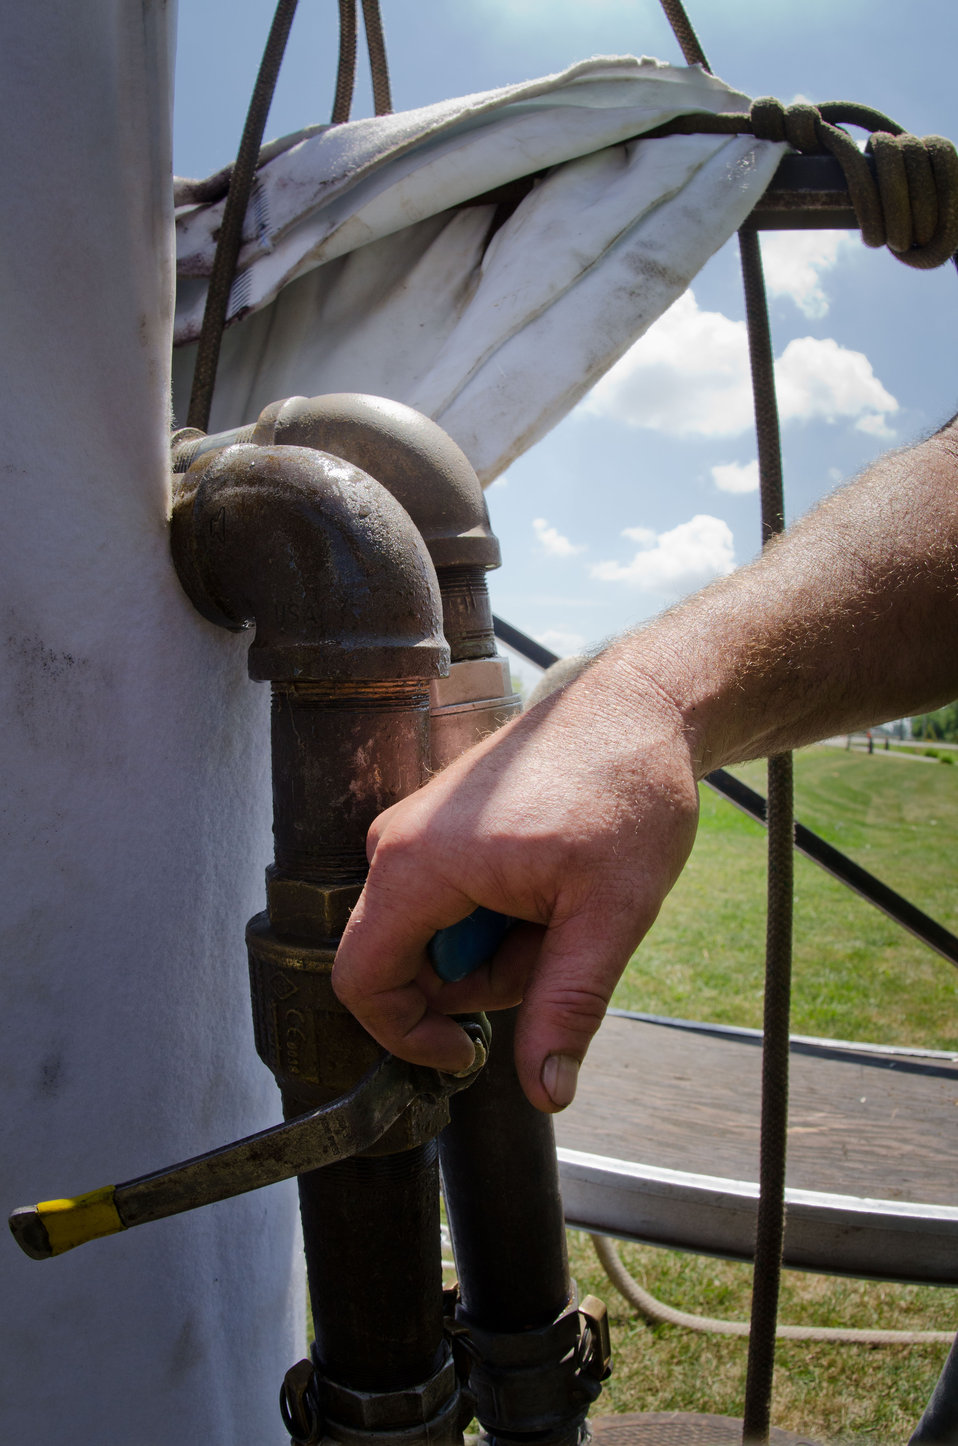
Water valves are opened to begin recirculation water that will be heated to cure the white resin impregnated fabric into a hard plastic pipe lining that extends from one manhole to the next one, on Tuesday, July 19, 2011, part of Water hoses from a tanker truck leads to a truck mounted boiler that heats water for recirculation into white resin impregnated fabric in a sanitary sewer pipe that runs under these grounds. It will cure the fabric into a hard plastic pipe lining from one manhole to the next one, on Tuesday, July 19, 2011, as part of Water hoses from a tanker truck leads to a truck mounted boiler that heats water for recirculation into white resin impregnated fabric in a sanitary sewer pipe that runs under these grounds. It will cure the fabric into a hard plastic pipe lining from one manhole to the next one, on Tuesday, July 19, 2011, as part of Buena Vista Township Phase II Sewer Project, in Michigan, where the United States Department of Agriculture funded the refurbishment and rehabilitation of 45,500 linear feet of defective sewer pipe, and more than 200 manholes; on Tuesday, July 19, 2011. The project includes the construction of an off-site excess flow basin; construction of a pump station; and improvements at the wastewater treatment plant. The system will serve 2,349 residential and 177 commercial customers and will bring the township into compliance with environmental regulations regarding pollutant discharges.
Inspections revealed that the 1960s sanitary sewer system had inflow from storm and rainwater systems and overflowed into the sanitary sewer system. Infiltration was found in the form of cracks, and other failures that allowed groundwater to enter. Rather than digging up the old system, rehabilitation with a cured-in-place-pipe (CIPP) method was chosen. This provides up to a 50% savings and the liner is projected to last 50-100 years. CIPP repair of the 8-30” diameter pipes involves pulling a resin-saturated fabric liner through a damaged pipe, which is then cured with steam or hot water to form a tight-fitting, joint less replacement pipe. Trenchless repair methods require less digging than traditional “dig and replace” repair methods and minimize damage to yards and landscaping. There are two of these teams and one manhole rehabilitation to seal the underground casting frame or brick structure. They process 600-800 feet per day.
Wade Trim Inc. Professional Engineer Tiffany Harrison said about working with the United States Department of Agriculture’s Rural Development “It was very easy, they make it very straight forward, in what paperwork they need. They were always available for questions.
USDA Rural Development has funded water and sewer projects in 117 Michigan communities serving more than 94,000 customers.
Senior Advisor to the Secretary of Agriculture Doug O’Brien said, “America will win the future by out-building, out-educating and out-innovating the world,” O'Brien said. “The Obama Administration is committed to the residents and business owners of Buena Vista Township in building the infrastructure needed to protect our environment and ensure clean water for future generations.” Being almost entirely surrounded by the Great Lakes, Michigan residents know that a small problem upstream usually leads to much bigger problems downstream and that the impact of water pollution extends far beyond the immediate community.